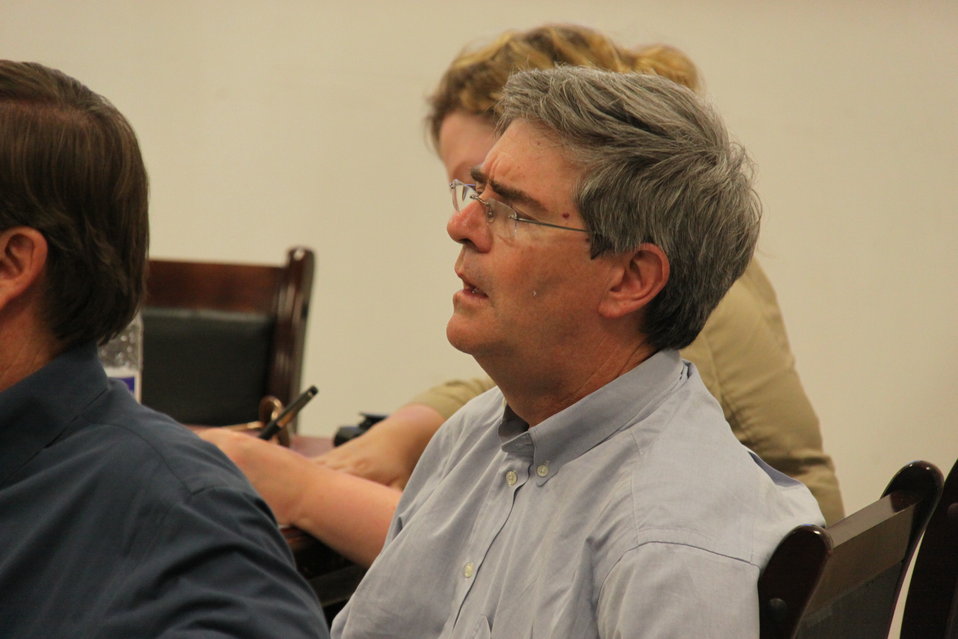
Meeting with Local Leaders in Kandahar